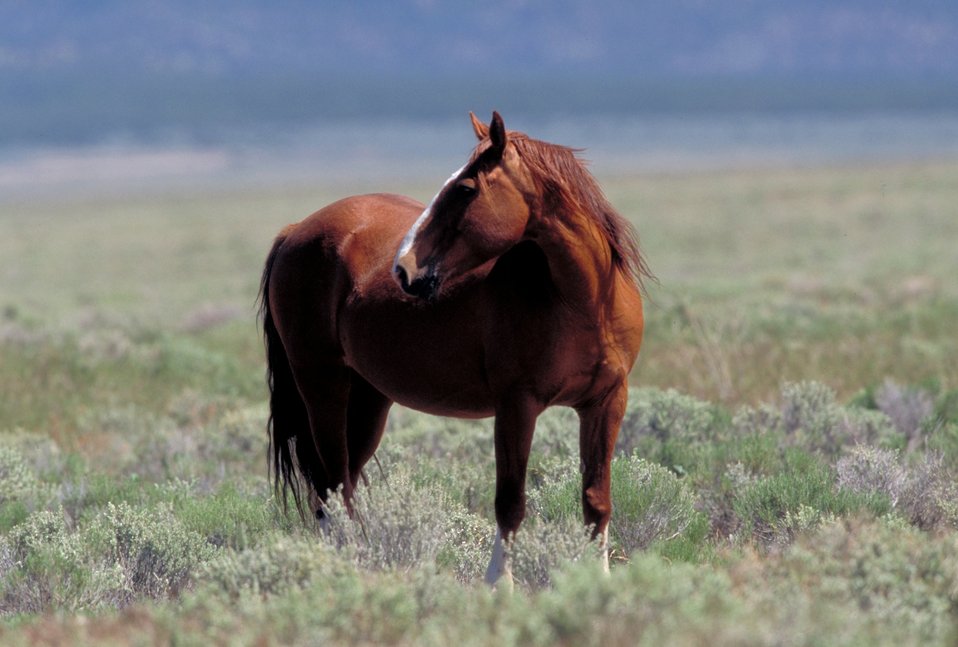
Onaqui Herd near Dugway, Utah.